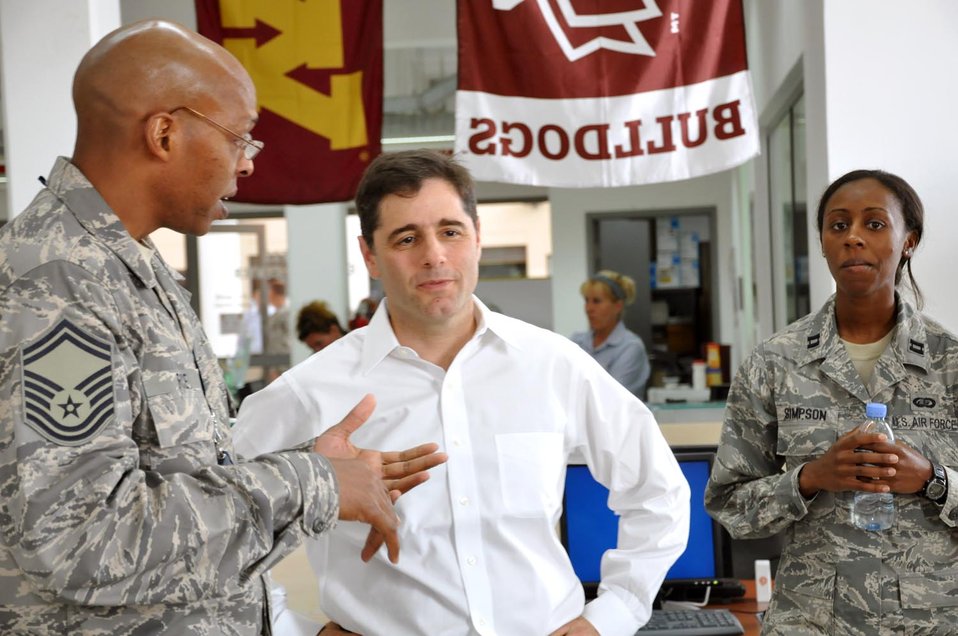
Chairman Genachowski visits with U.S. soldiers